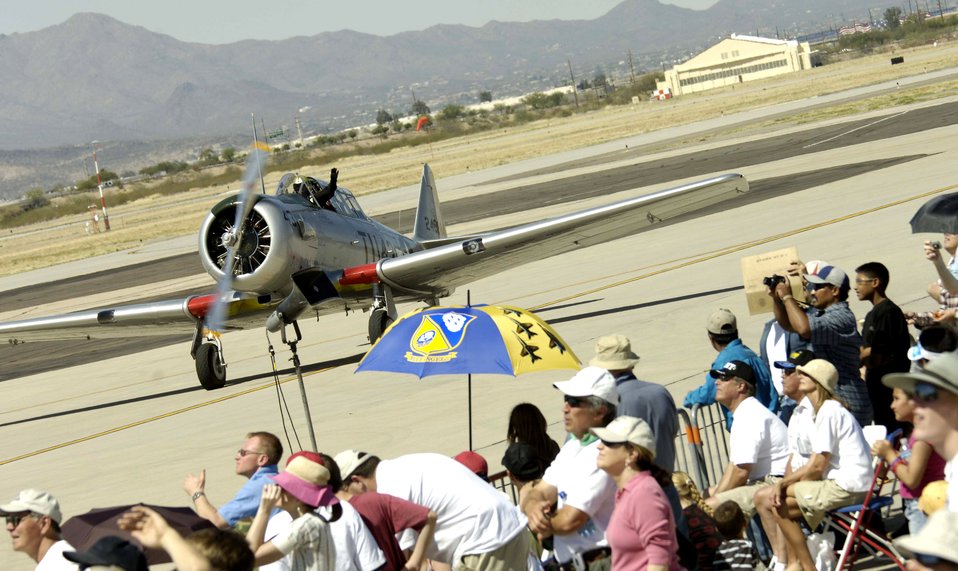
Air show features '80 Years of Airpower for America'

A T-6 Texan taxis by the crowd March 18 during the 2007 Aerospace and Arizona Days air show at Davis-Monthan Air Force Base, Ariz. The two-day air show offered public an up-close look at military and civilian aerial demonstrations and static-display aircraft from across the U.S. The theme for this year's show was